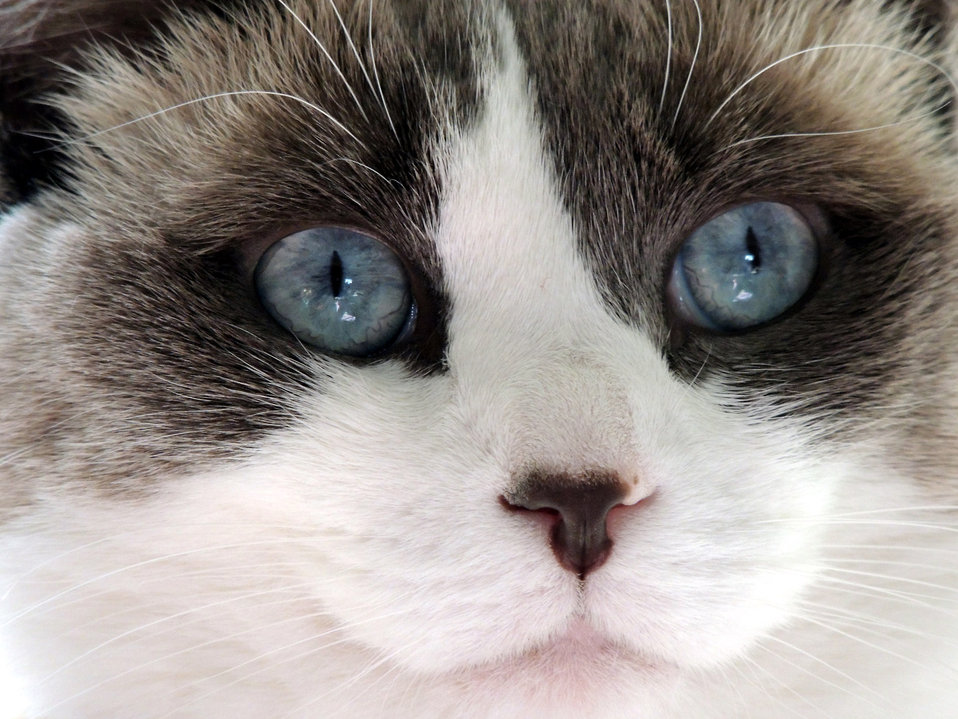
Ragdoll cat face close up.